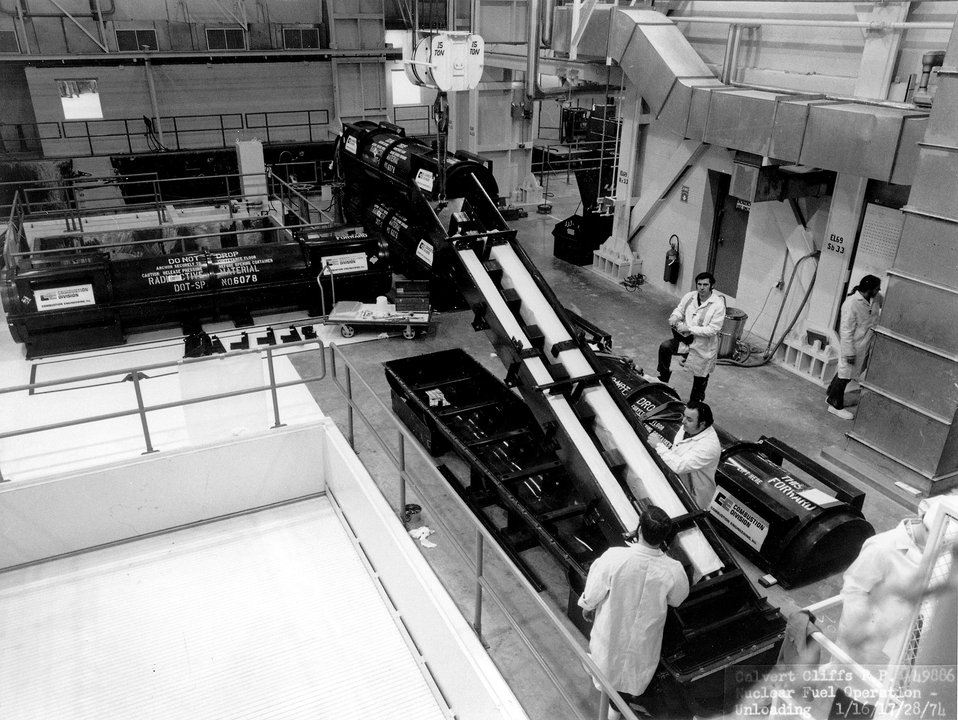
Unloading of nuclear fuel early in 1974 at the Baltimore Gas and Electric Company's Calvert Cliffs Nuclear Power Plant near Lusby, Md., on the Chesapeake Bay. Circa 1974.